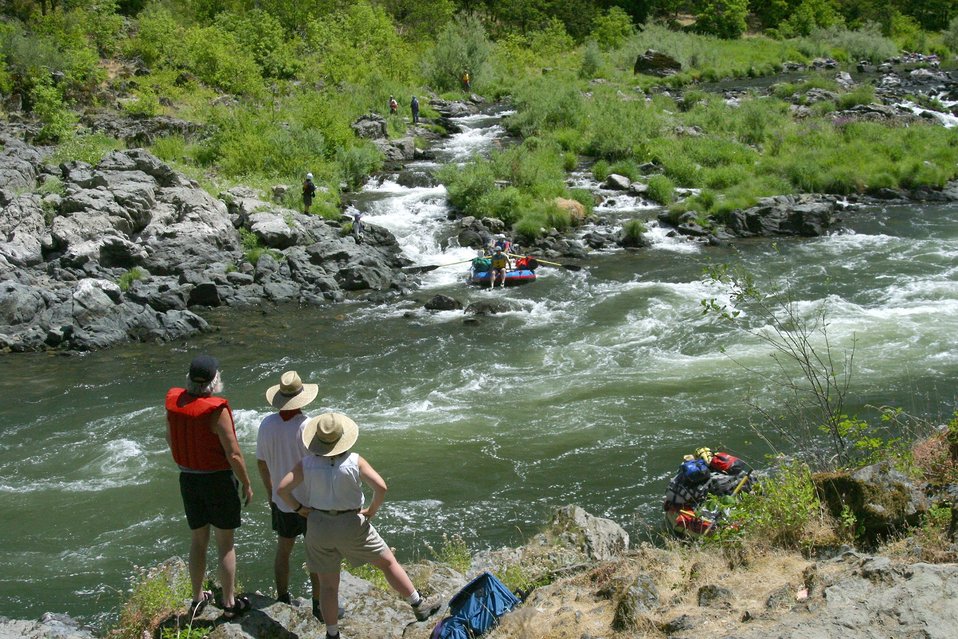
Rainie Falls Fish Ladder